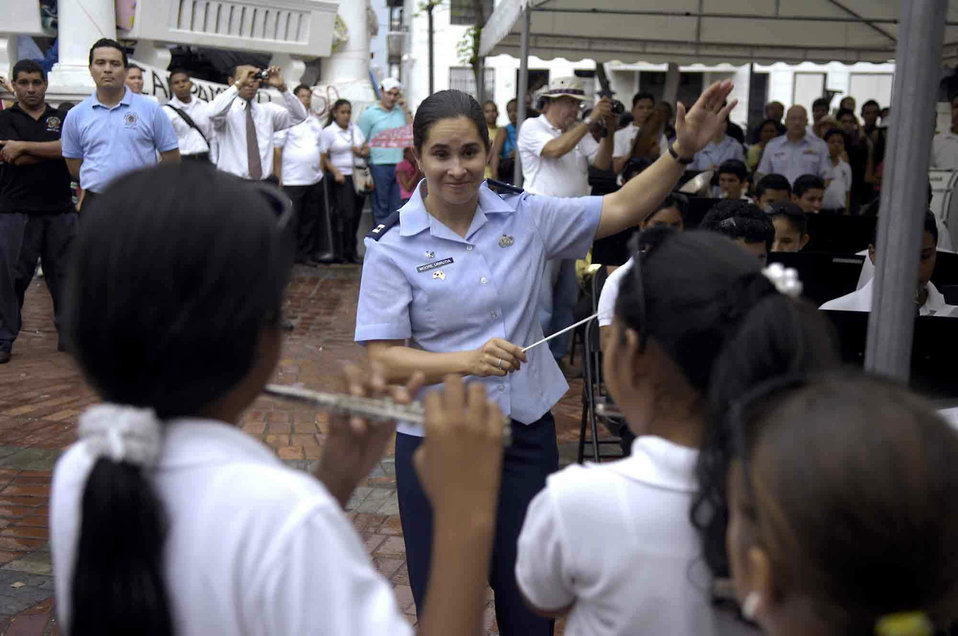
Continuing Promise 2009

Capt. Christina Moore-Urrutia, the Air Force Band South conductor, directs a combined band of locals and military members during a special performance of